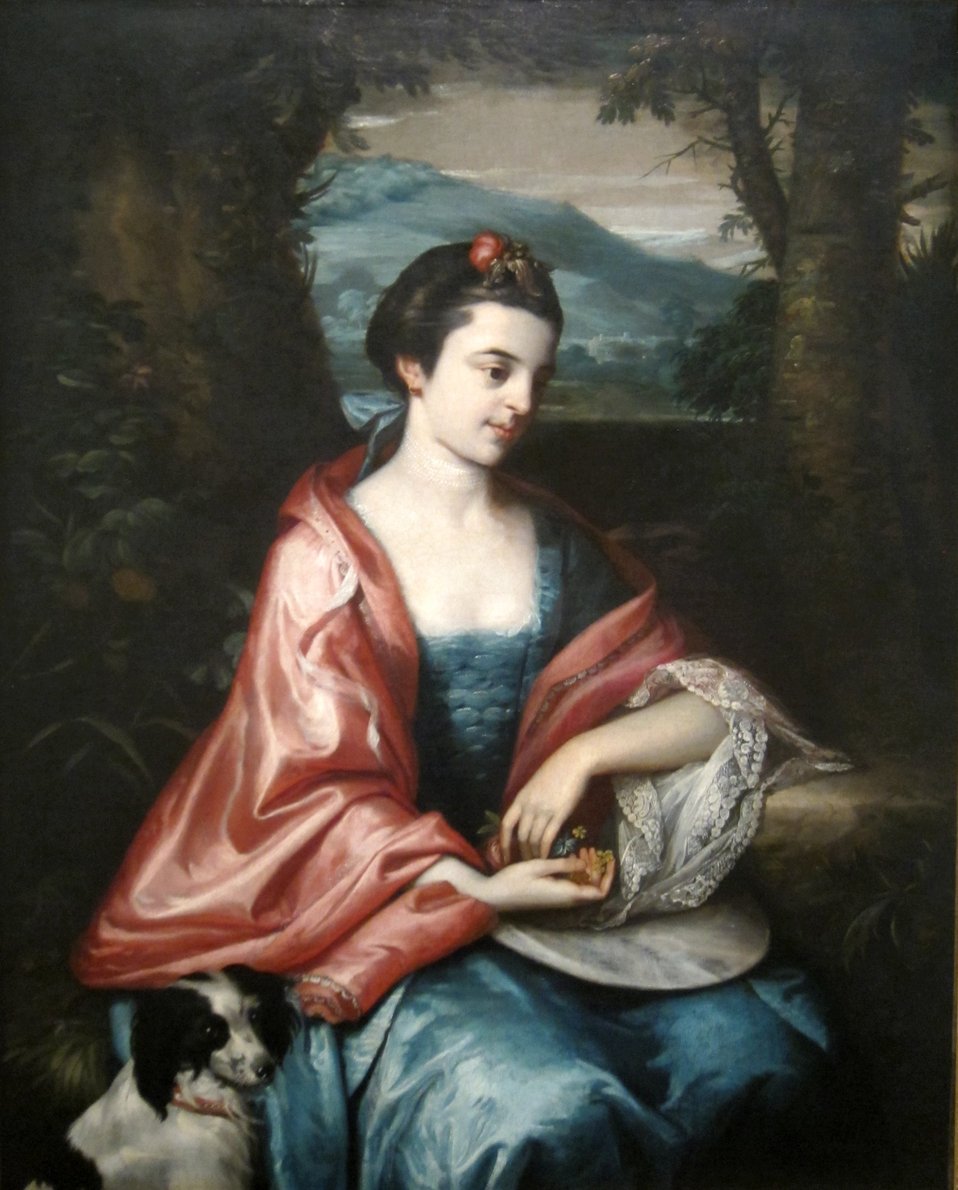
'Anne Allen, later Mrs. John Penn' by Benjamin West, Cincinnati